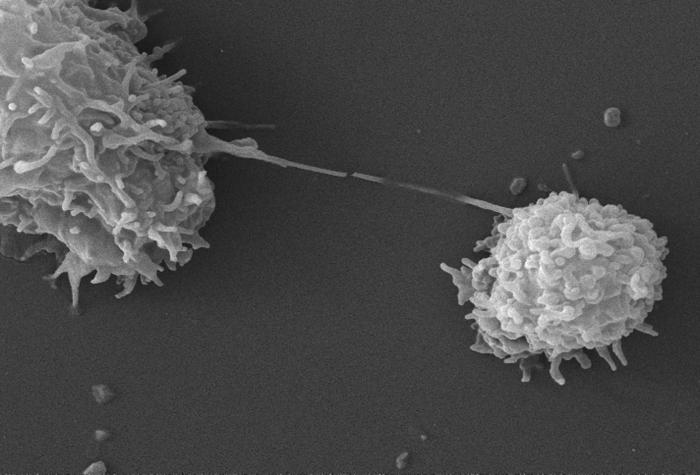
This scanning electron micrograph (SEM) revealed two Acanthamoeba polyphaga protozoa, as they were interacting through their projecting pseudopodia, from the Latin pseudo = false, and podia = feet, extending from the surfaces of these organisms. These pseudopodia enable the amoebae to move about, and grasp objects in their environment.